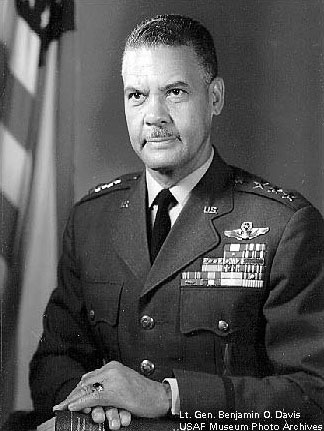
Lt. Gen. Benjamin O. Davis Jr.